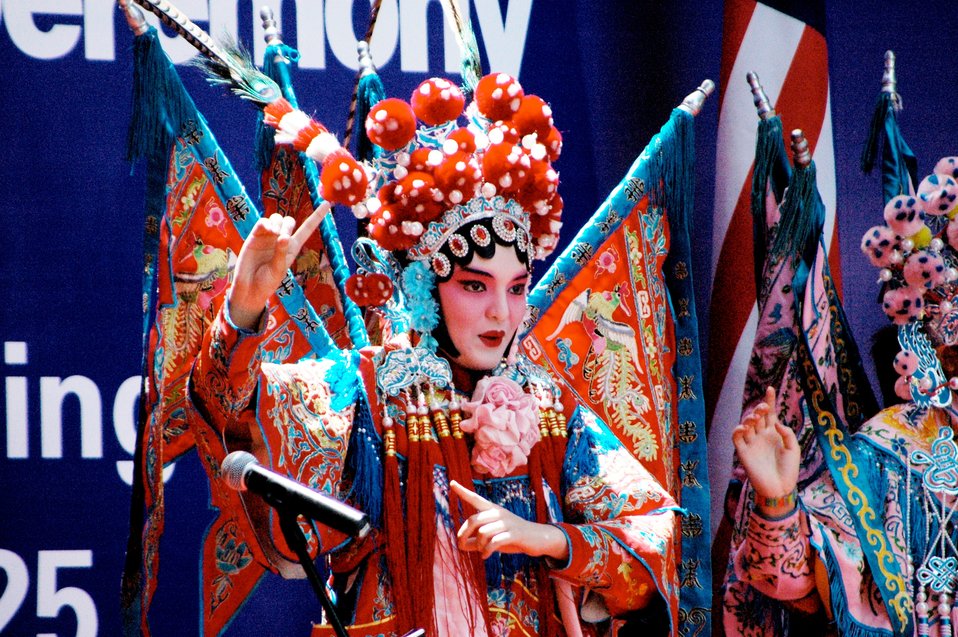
A Chinese Artist Performs at the People-to-People Launch Ceremony

A Chinese artist in a traditional costume perform at the U.S.-China Consultation on People-to-People Exchange Dialogue Launch Ceremony at the National Center for the Performing Arts in Beijing, China, May 25, 2010.